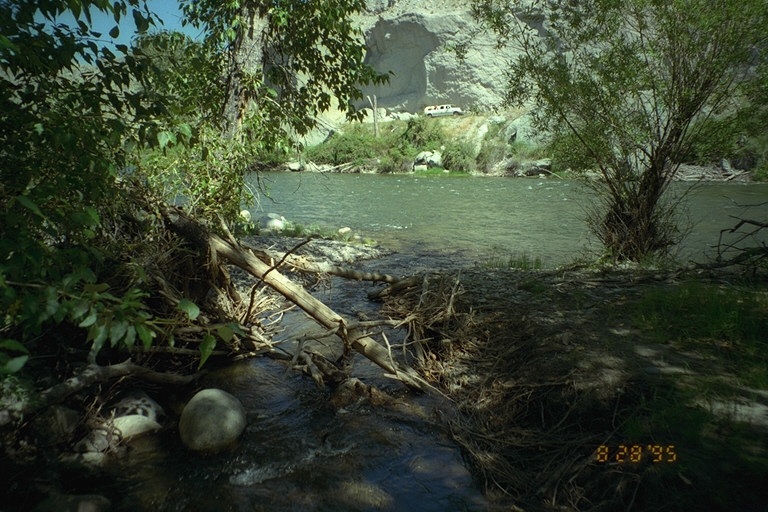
Riparian area Public Lands Salmon Field Office UCSC Upper Columbia Salmon Clearwater District